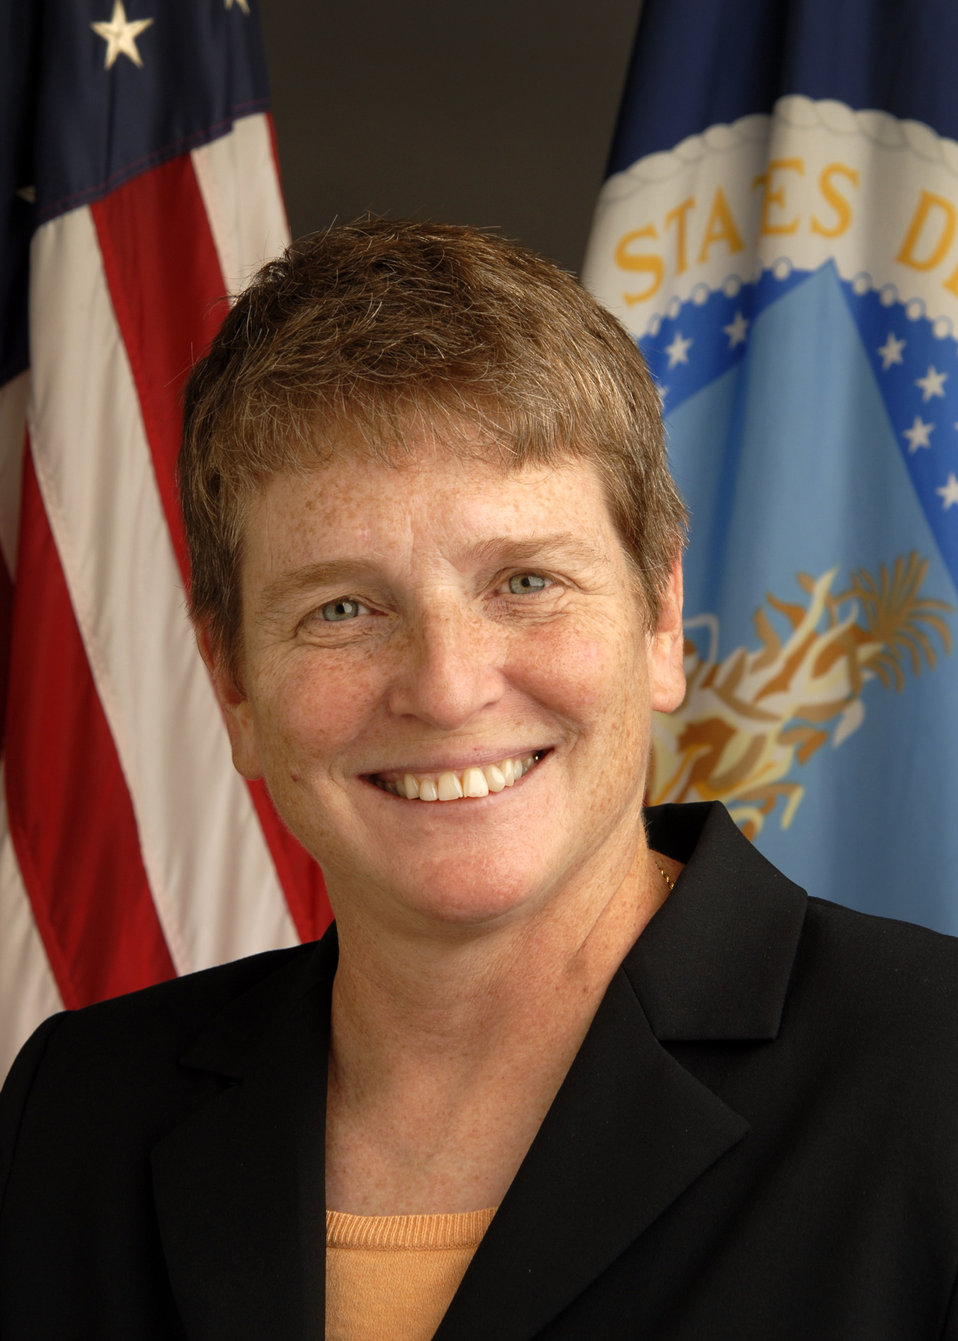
20120807-OSEC-KJH-2852 Deputy Assistant Secretary for Departmental Management, Robin Heard

Deputy Assistant Secretary for Departmental Management, Robin Heard.